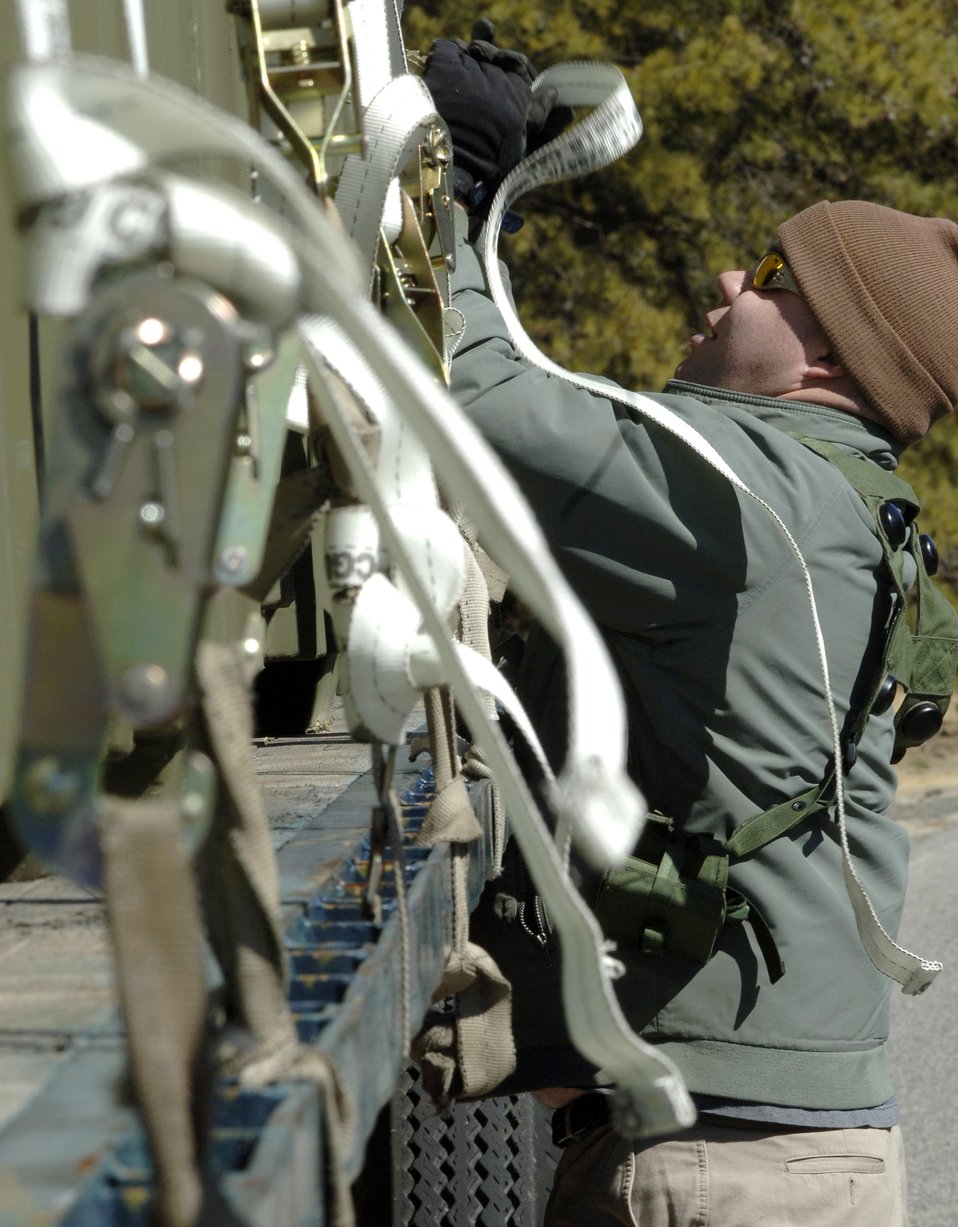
Exercise Eagle Flag

Kevin Tully, playing the role of a Chimaeran contractor, secures a load of relief supplies during Exercise Eagle Flag's humanitarian relief operations Sunday, March 5, 2006, at Naval Air Engineering Station Lakehurst, N.J. Eagle Flag is designed to simulate real-world conditions as closely as possible. This is the first time the exercise has had a humanitarian relief operations scenario. Mr. Tully is an Eagle Flag readiness management support contractor.